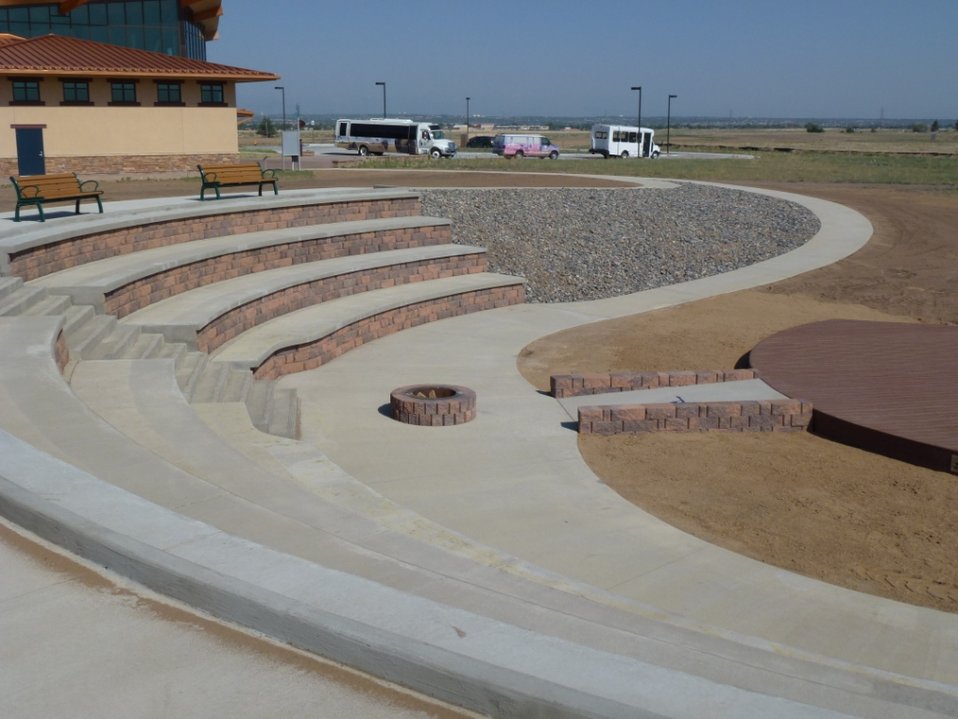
Rocky Mountain Arsenal National Wildlife Refuge’s Amphitheater

Thanks to the work of a Mountain-Prairie Region Refuge Maintenance Action Team (MAT), a new amphitheater was recently erected adjacent to the Rocky Mountain Arsenal National Wildlife Refuge’s visitor center in Commerce City, Colo.

The amphitheater is a fully accessible facility with seating for 175 to 200 spectators. It features a stage and fire pit for special programs. The addition of the amphitheater to the visitor center will enhance interpretive program delivery as part of the facility’s regular visitor services and will be used for special events. Commerce City has also expressed an interest in using the amphitheater for programs of its own.

The project was completed under budget and cost nearly half as much as the bids received from private contractors. According to rough estimates, the U.S. Fish & Wildlife Service saved approximately $70,000. The substantial cost savings was realized by employing the MAT, which is comprised of in-house maintenance workers with various skill sets from several stations across the region. Typically, deferred maintenance dollars pay for the project materials, labor, travel, room and board of MAT members. MAT projects usually take between one to five weeks to complete.

Construction began May 7, 2012 and concluded June 13, 2012 with a one-week pause in the middle of the project to allow MAT members a break. In total, the project took 34 12-hour-work days. The MAT worked more than 2,000 man hours on the project with no time lost due to injury or any safety-related issues.

The Refuge MAT consisted of:
• Rich Iwanski – Bear River Migratory Bird Refuge – Engineering Equipment Operator – Pre-construction organization, MAT team foreman, Equipment Operator and other general work.
• Cameron Fenrich – Mountain-Prairie Regional Office – Civil Engineer – Project Manager, Project Engineer, amphitheater design, on-site inspections, general construction work and overall construction and MAT team organization.
• Steve Raney – Baca National Wildlife Refuge – Maintenance Worker - Equipment Operator and other general work.
• Justin Wanzek – Valley City Wetland Management District – Maintenance Worker- Equipment Operator and other general work.
• Delbert “Skip” Palmer – Lee Metcalf National Wildlife Refuge – Maintenance Worker - Concrete Specialist and other general work.
• Tom Ronning – Rocky Mountain Arsenal National Wildlife Refuge – Range Conservationist - Truck Driver and other general work.